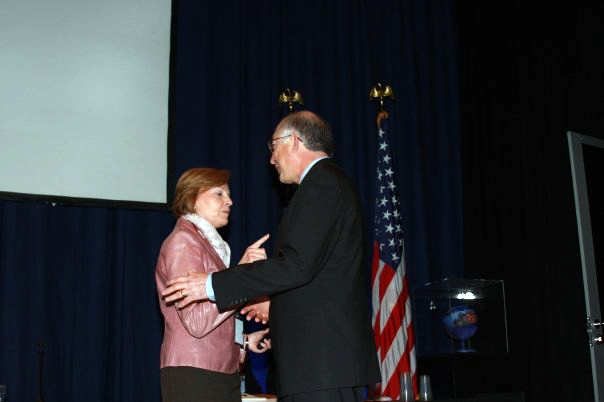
U.S. Ambassador to Denmark Laurie Fulton at the U.S. Center at COP15, Bella Center, Copenhagen, Denmark on December 11, 2009.